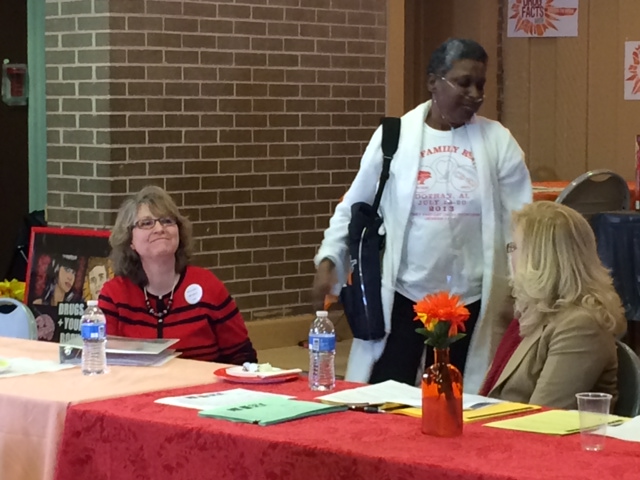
Getting the Facts: NDFW 2014

Folks from Orlando, Florida are 'Shattering the Myths' during the 2014 National Drug Facts Week at Orlo Vista Park.